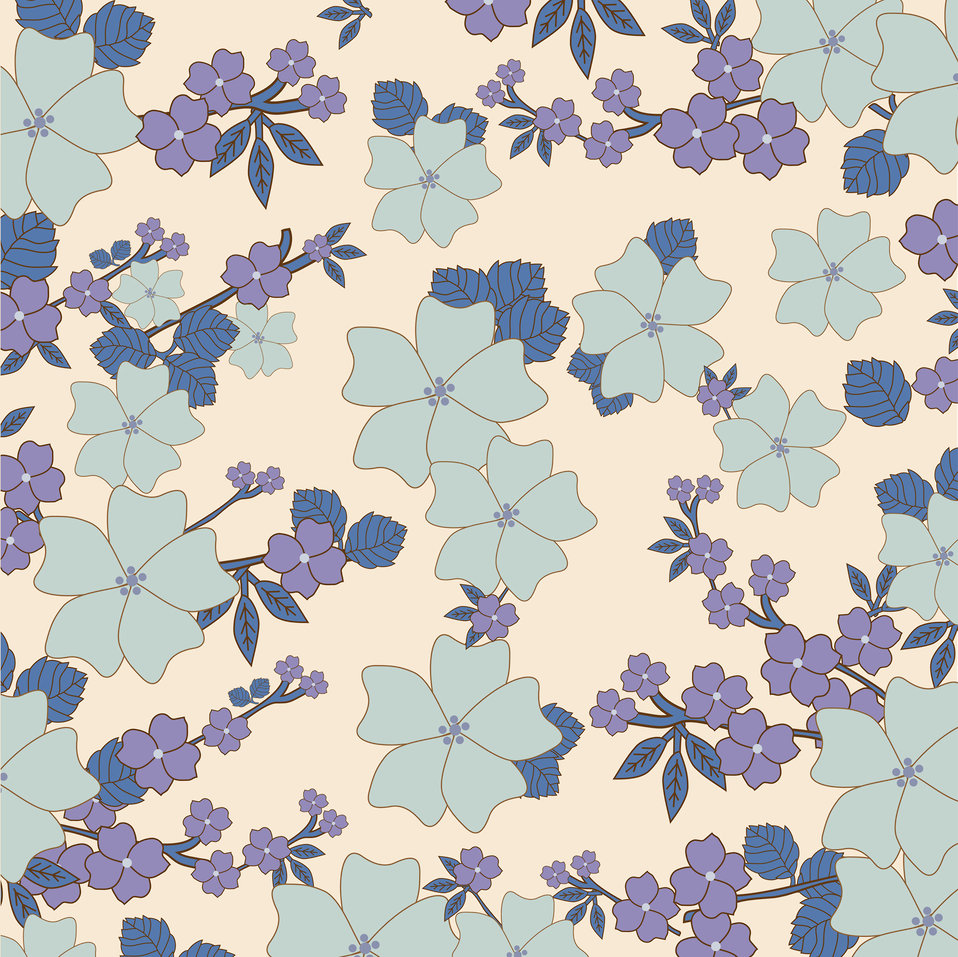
Vintage floral wallpaper background

Beautiful shades of blue vintage floral, flowers, wallpaper pattern background.